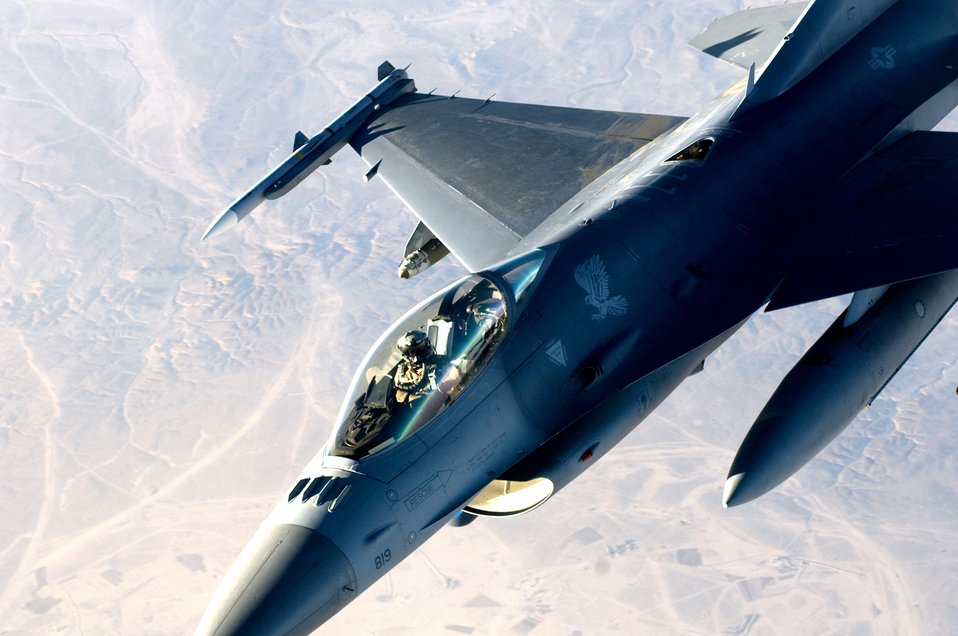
CENTAF Airpower Summary for April 20, 2007

A F-16 Fighting Falcon detaches from a KC-135 Stratotanker after refueling over Iraq in support of Operation Iraqi Freedom.